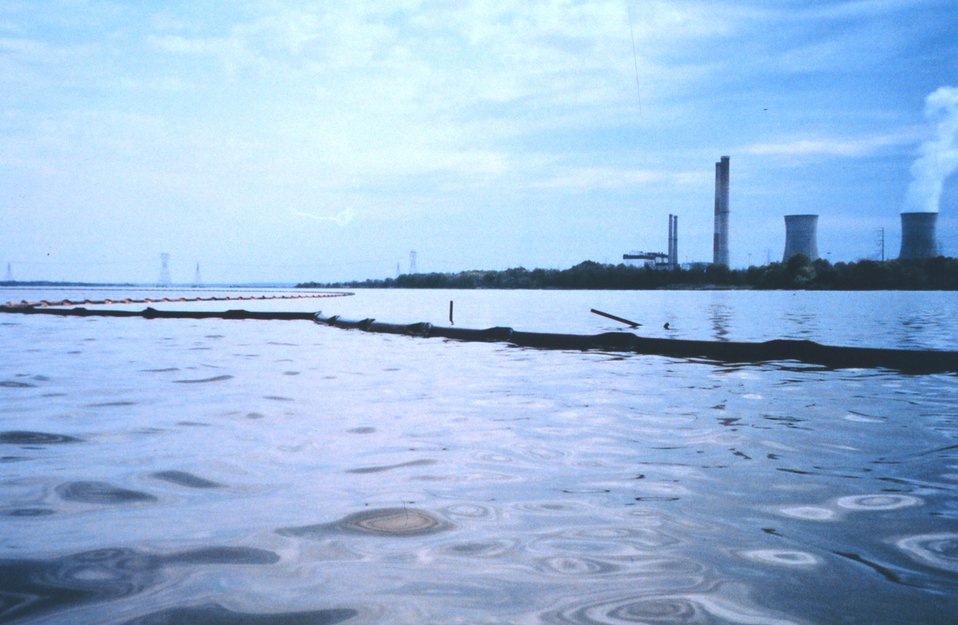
Oil containment boom placed in the Patuxent River following the April 7th Swanson Creek oil spill.